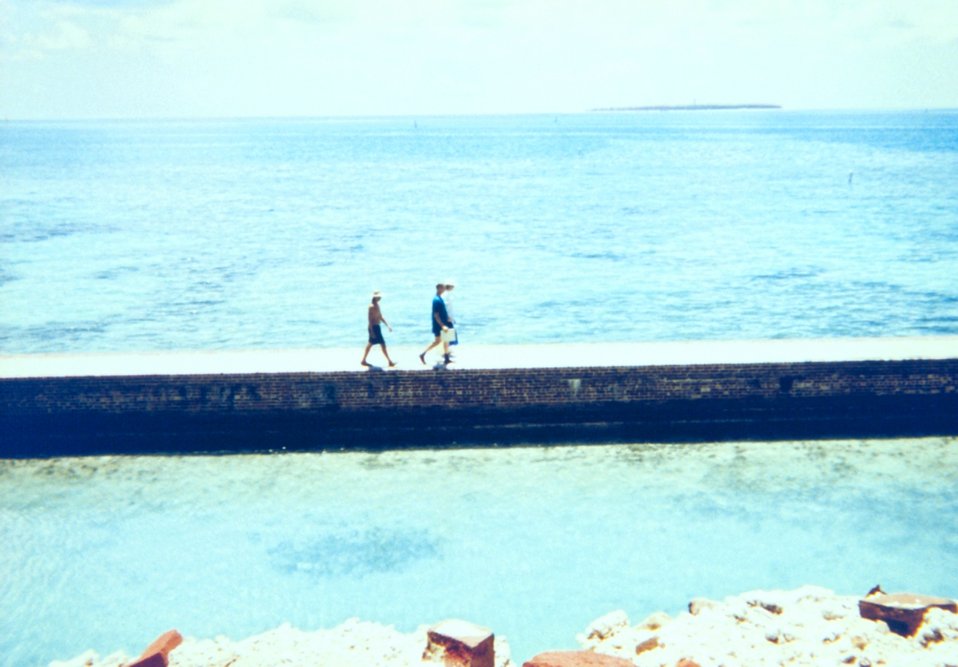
Walking on the sea wall around Fort Jefferson